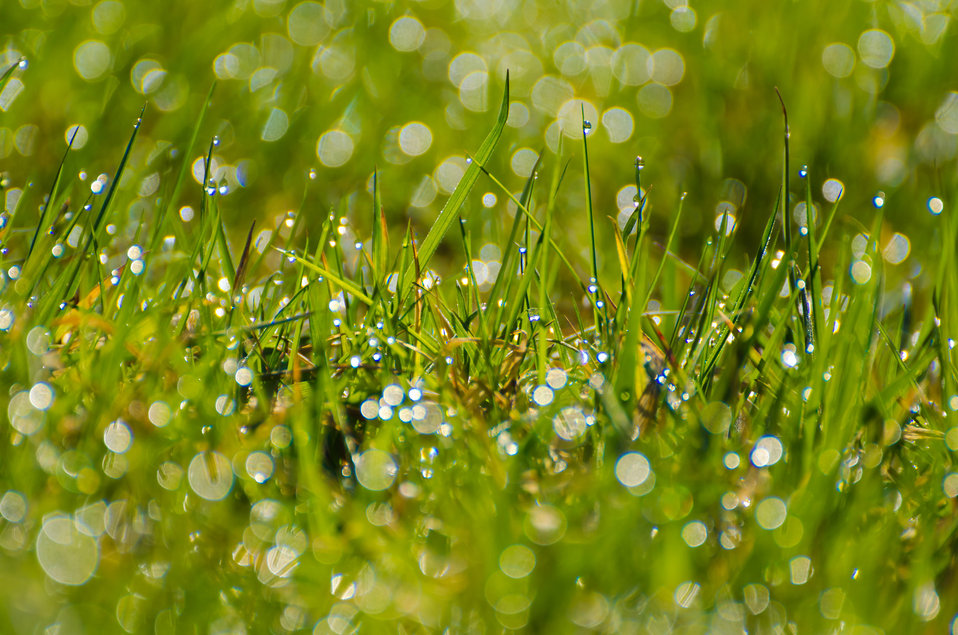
Grass - background.